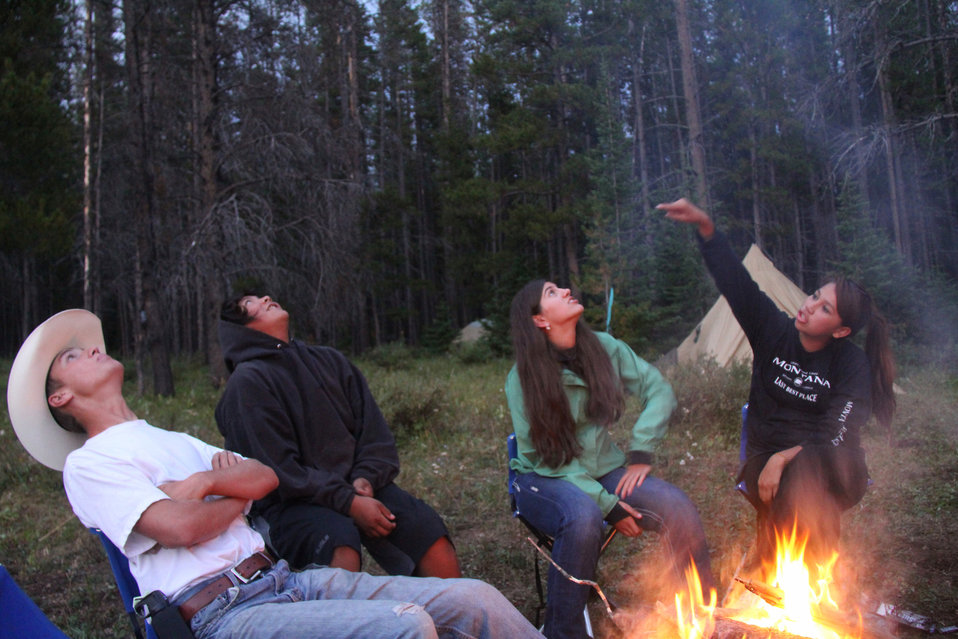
Wilderness50 Stargazing Untrammeled

Youth who were part of the filming of “Untrammeled” marvel at the stars appearing overhead, as twilight descends on camp in the Scapegoat Wilderness in Montana.